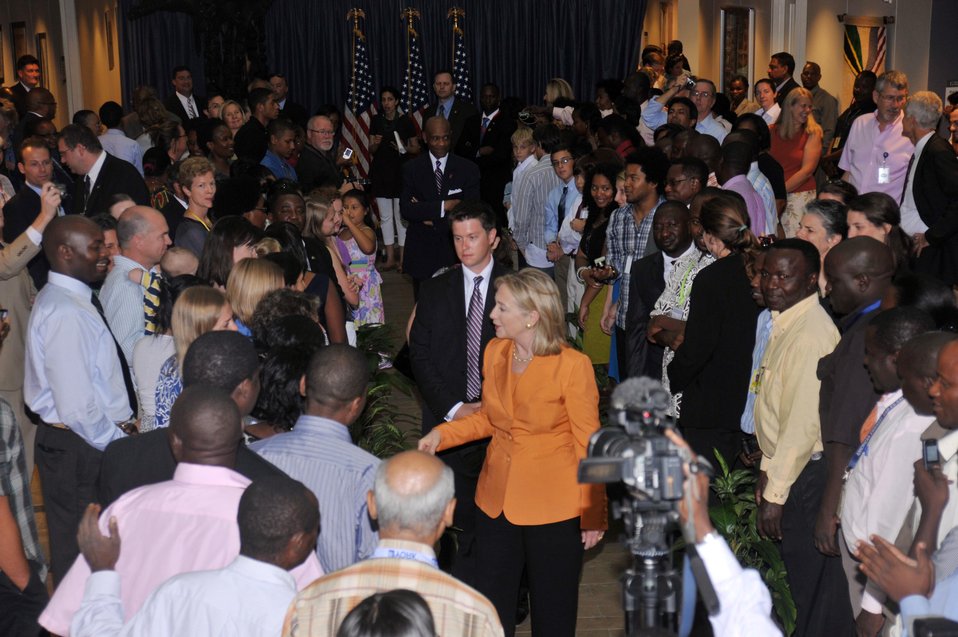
Secretary Clinton Meets With Embassy Tanzania Staff and Families

U.S. Secretary of State Hillary Rodham Clinton meets with staff and family members of the U.S. Embassy in Dar es Salaam, Tanzania, on June 12, 2011.